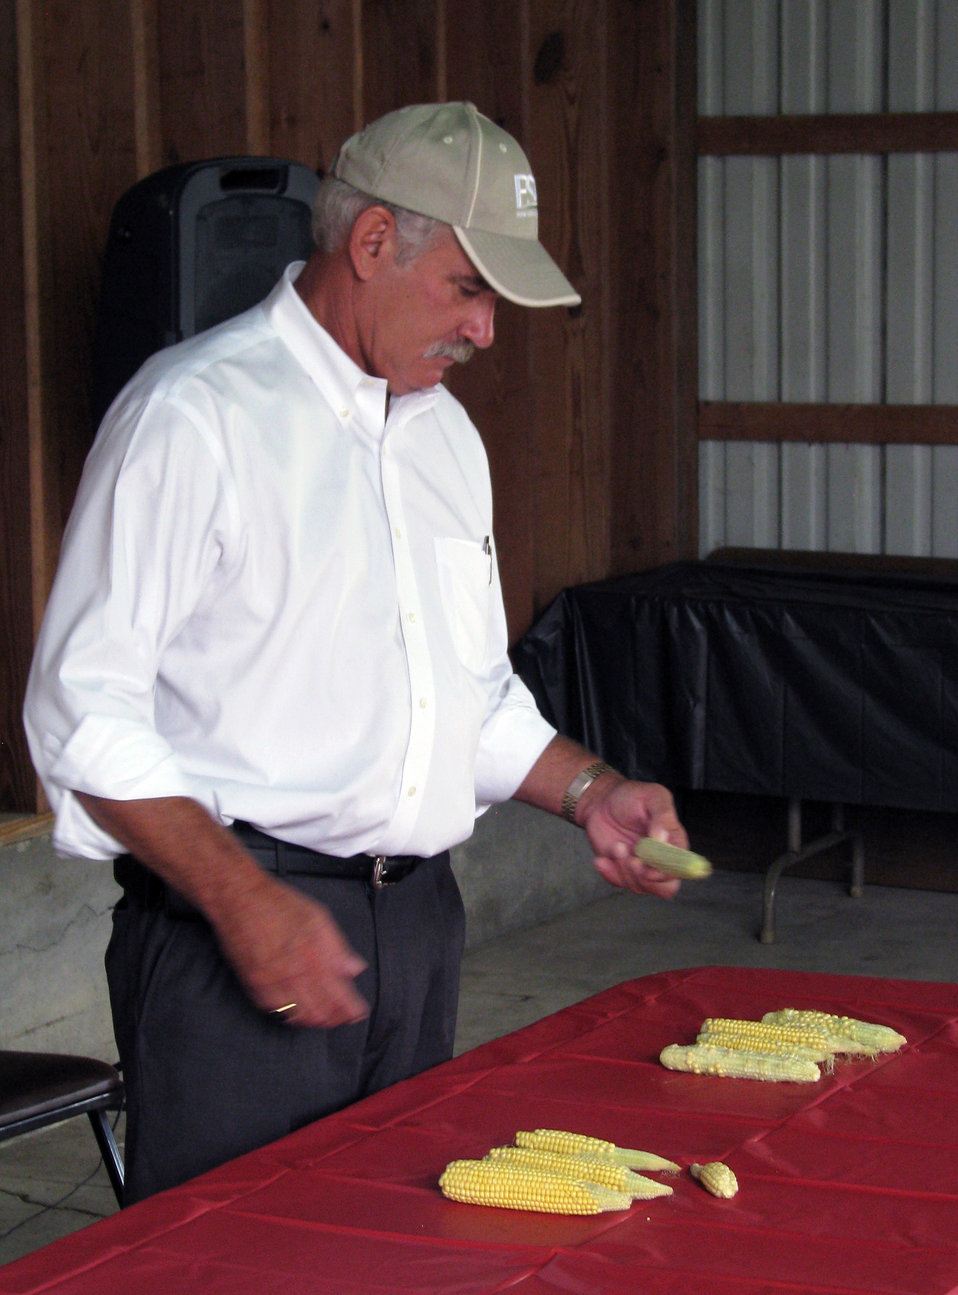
Agriculture Under Secretary for Farm and Foreign Agriculture Service (FFAS) Michael Scuse examines samples of drought stricken corn in Whiteland, IN on Thursday, July 19, 2012. Agriculture Secretary Vilsack has instructed Agriculture subcabinet leaders to travel to affected drought areas to augment ongoing assistance from state-level U.S. Department of Agriculture (USDA) staff and provide guidance on USDA’s new, streamlined disaster process. The U.S. Drought Monitor currently reports that 61 percent of the continental United States is in a moderate to exceptional drought.